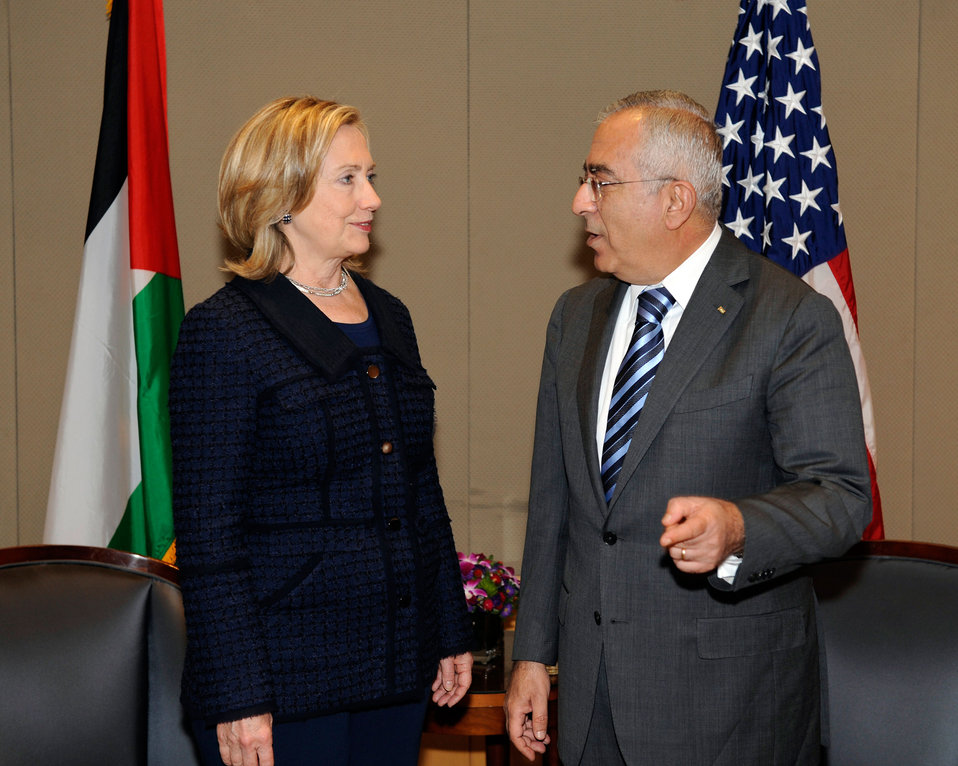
Secretary Clinton Meets With Palestinian Prime Minister Fayyad

U.S. Secretary of State Hillary Rodham Clinton meets with Palestinian Prime Minister Salam Fayyad at the David Citadel Hotel in Jerusalem on September 15, 2010.